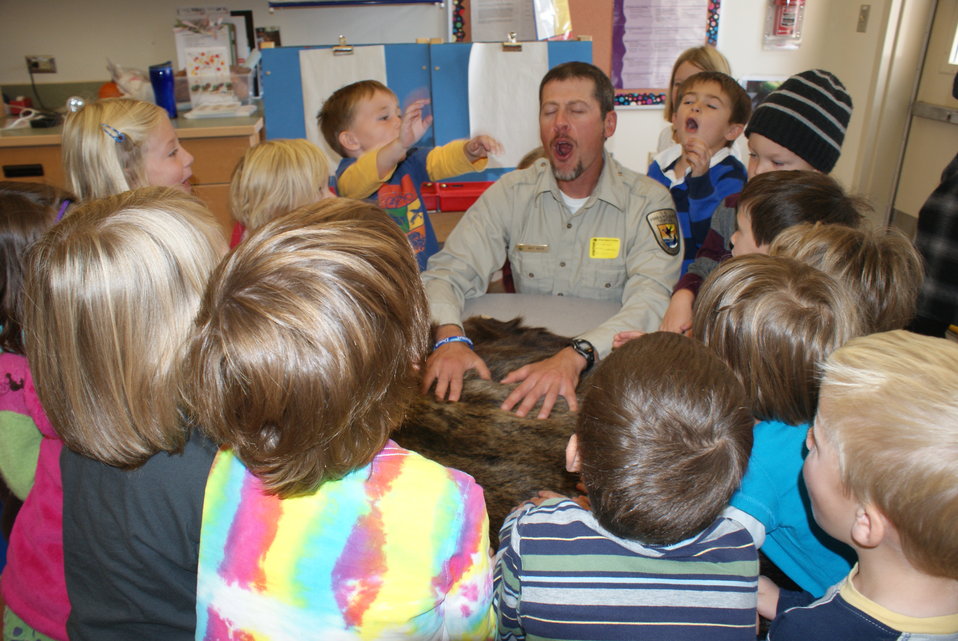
Scientists in the Community Program

U.S. Fish and Wildlife Service Mountain-Prairie Region Deputy ARD for External Affairs, Matt Kales, introduces early childhood education students at William Roberts Elementary School in Denver to some of Colorado's native and historic wildlife species.